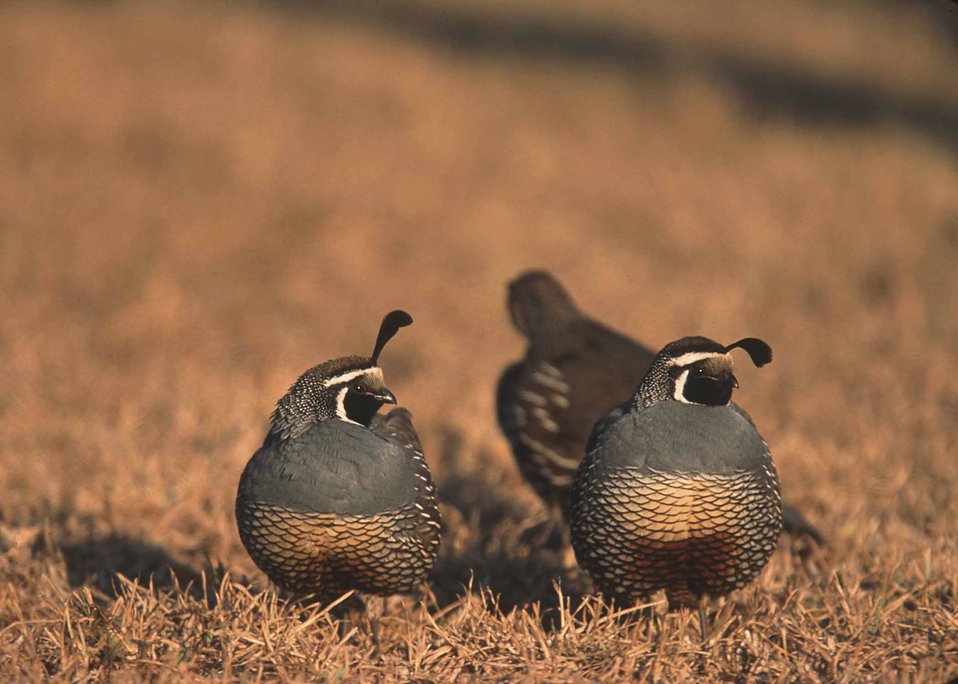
California Quail in Hawaii.